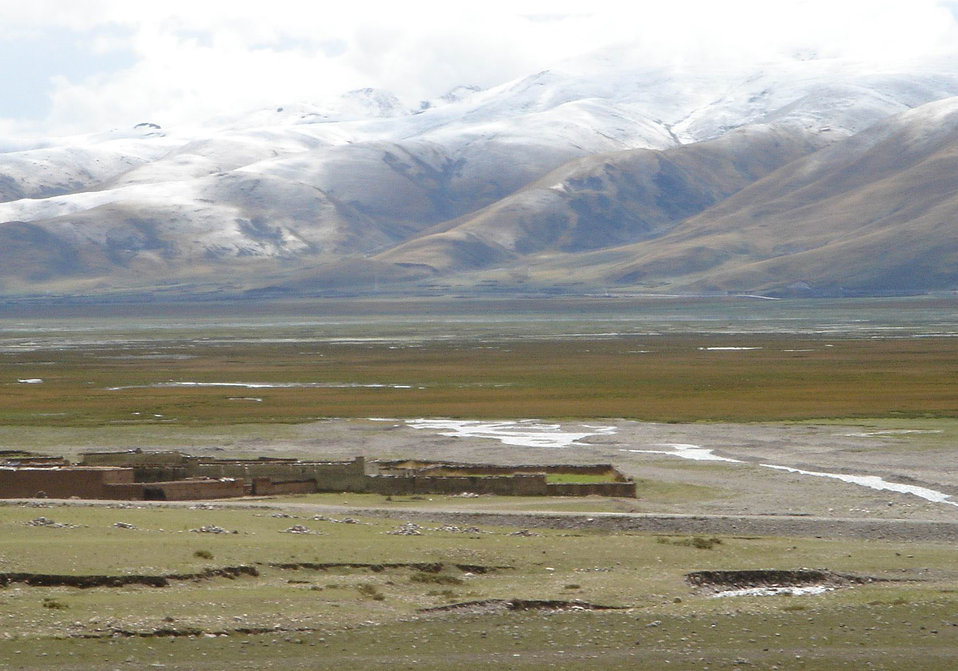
Uploaded by request of Guo Jinlong

Taken near Danggula Mountains in Tibet.

The snowed mountains, the clean creeks, the well protected wetlands are quite harmonized with the dwelling house of Tibetans. The living manners of Tibetans are quite good for the harmonization of nature and human beings.